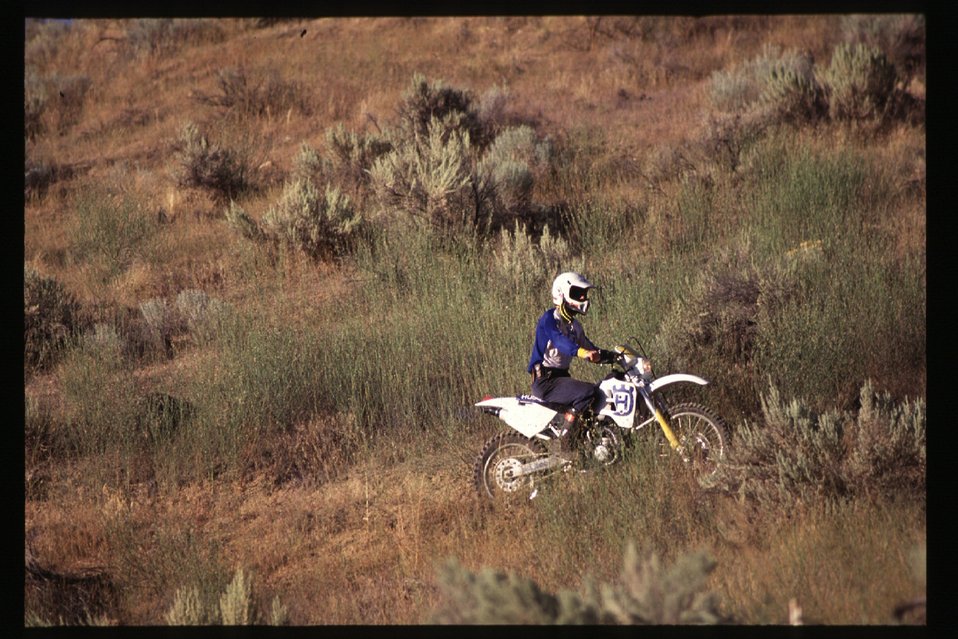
Biker in Boise Foothills Boise Front Four Rivers Field Office LSRD Lower Snake River District